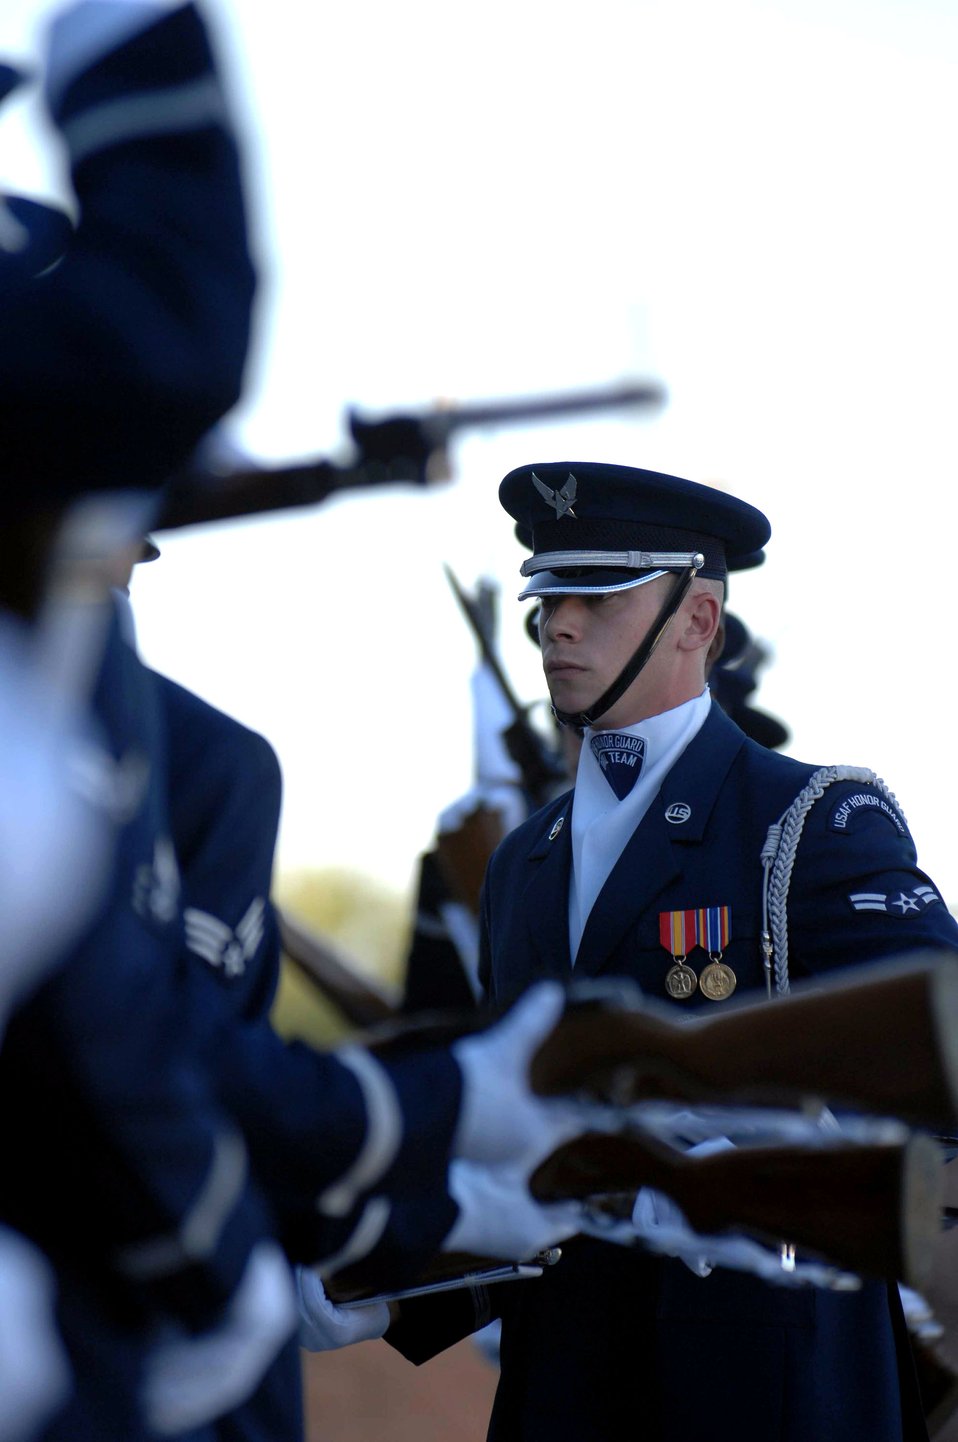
Vegas performance

Members of the Air Force Honor Guard drill team perform in front of the Thunderbird Hangar Nov. 6 at Nellis Air Force Base, Nev. The Air Force Honor Guard drill team is in Las Vegas for 14 performances throughout the military and civilian community and will perform during the Air Force 60th Anniversary Air Show and opening for Tops In Blue.